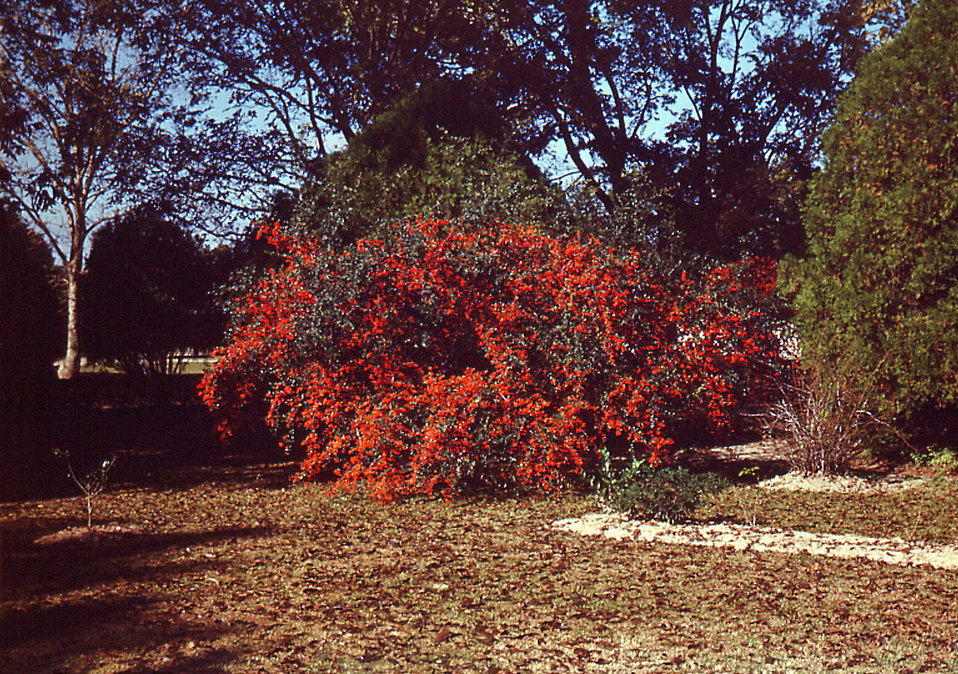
This was one of the magnificent holly berry trees that were growing on the grounds of the historic Carville, Louisiana Leprosarium, around one of the hospital's churches. Some of the patients had magical green thumbs, to which these magnificent shrubs surely attest. Being that the patients were for the most part quarantined, and therefore, sequestered from the surrounding society, participation in outdoor activities such as gardening, was enjoyed by all patients, as well as staff members.